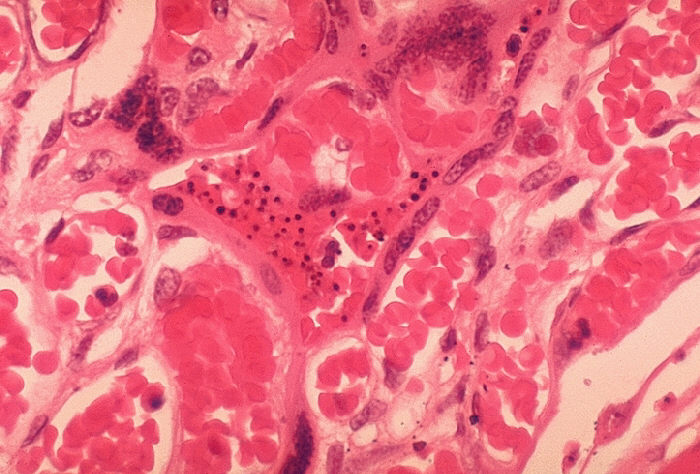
Histopathology of Plasmodium falciparum malaria, placenta.